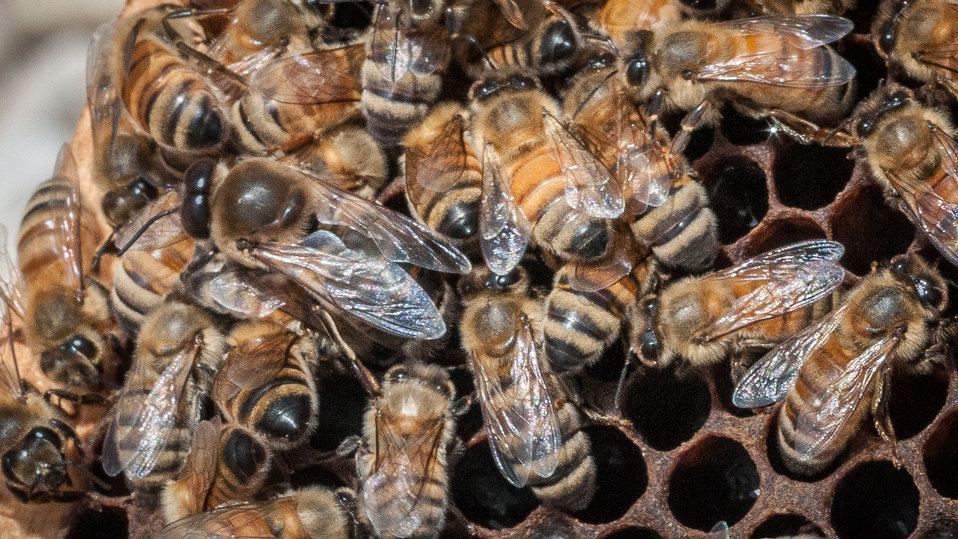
A queen Italian honey bee (large bee near center) in the U.S. Department of Agriculture People's Garden Apiary, atop the headquarters' Whtten Building in Washington, D.C., on Wednsday, May 22, 2013.